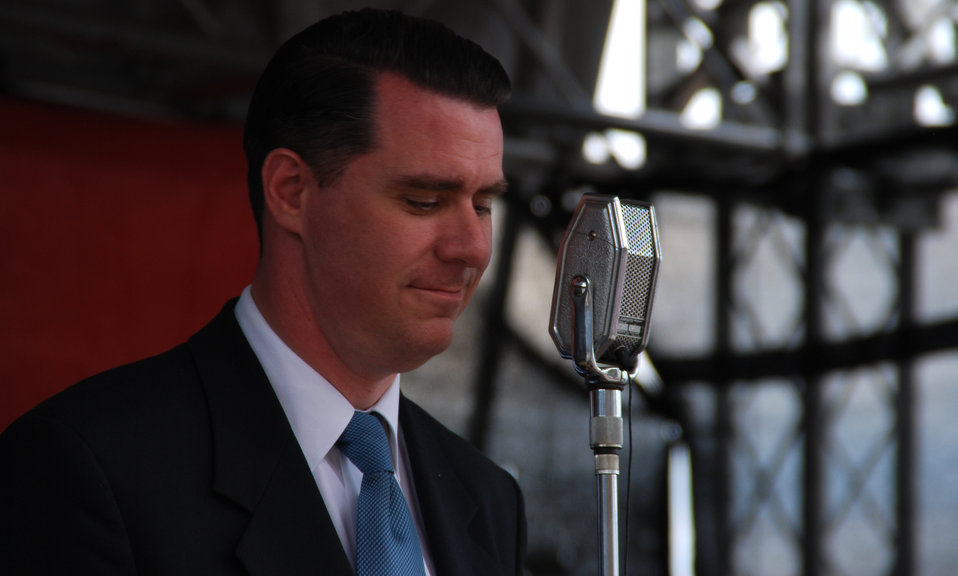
Andrej Hermlin, Deutscher Pianist und Bandleader